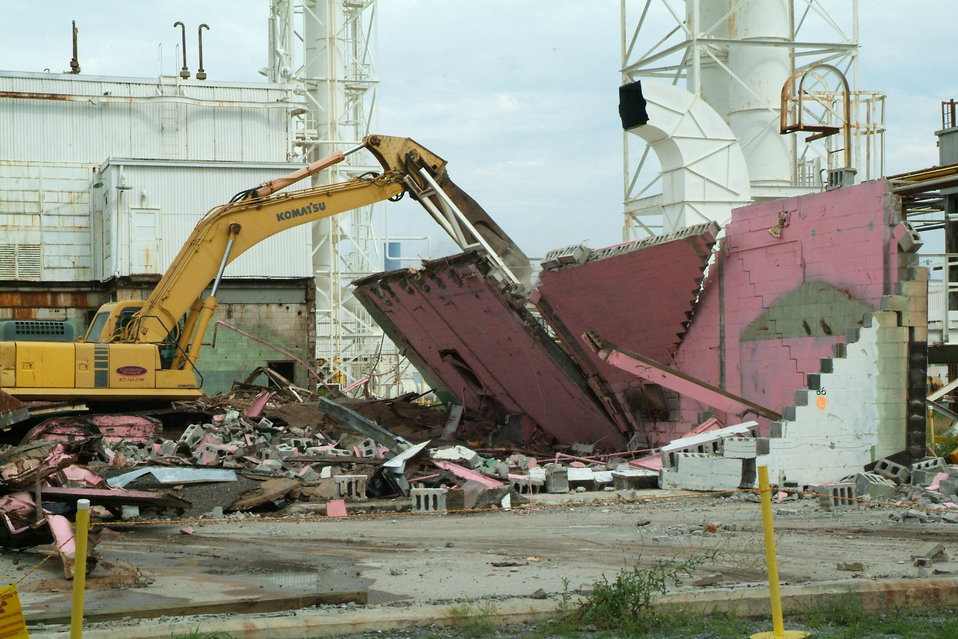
Paducah Feed Plant Demolition

Heavy equipment demolishes the last part of the eastern third of the Feed Plant at the Paducah Site. Cleanup continues to prepare the remaining part of the complex, pictured in the background, for demolition later.